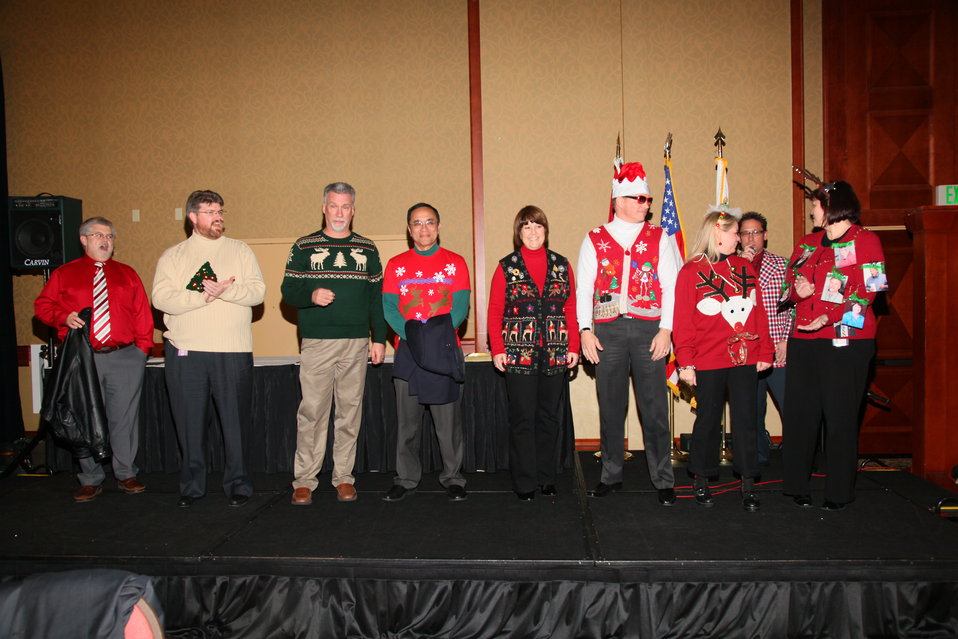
Sacramento District Holiday Party 2011